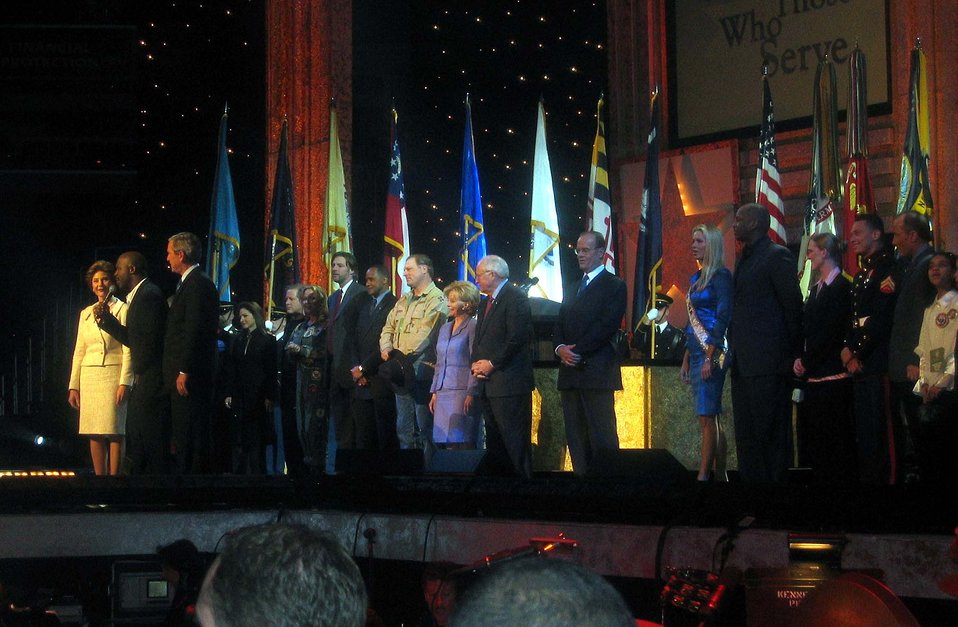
Musicians, celebrities entertain those who serve

WASHINGTON -- Gospel singer Bebe Winans sings a tribute to President Bush and the U.S. military during the "Saluting Those Who Serve" gala here Jan. 18. Also on stage are first lady Laura Bush; Vice President Dick Cheney and his wife, Lynne; and a star-studded cast of celebrity performers and entertainers.